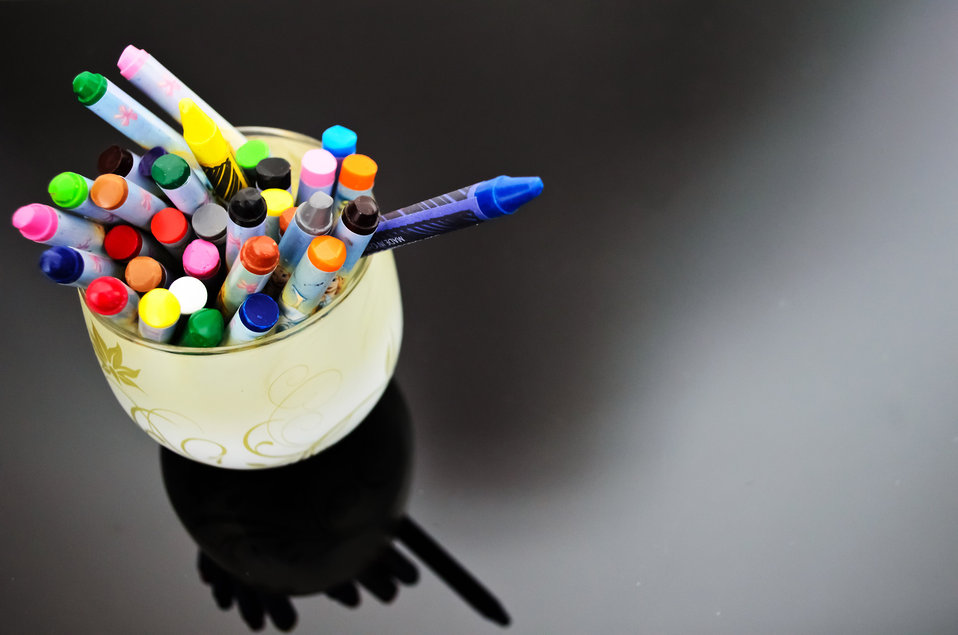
Wax crayons.